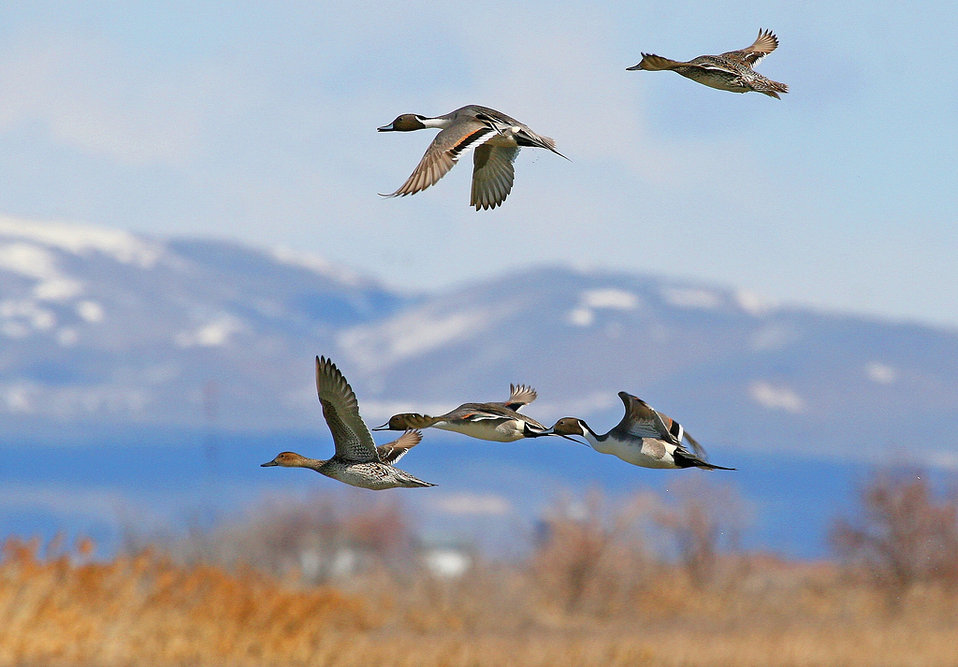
northern pintails in flight

Bear River Migratory Bird Refuge, UT